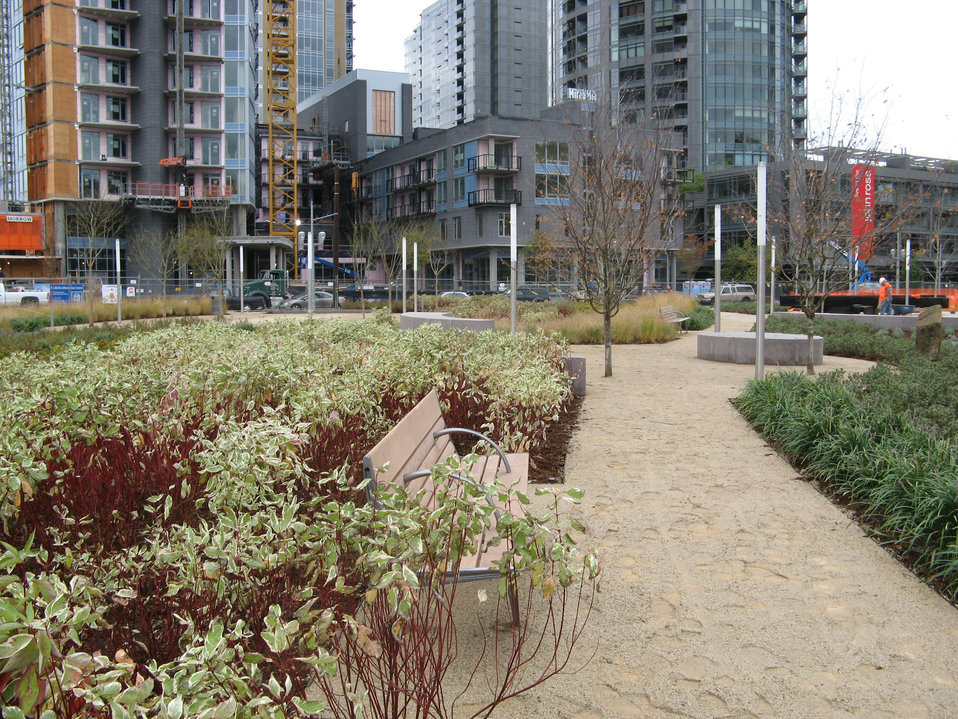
AFTER: Portland, OR

Portland’s plans for the restored area include a neighborhood with 10,000 jobs, new housing units, a greenway along the Willamette River, parks and open space and a multi-modal transportation system.